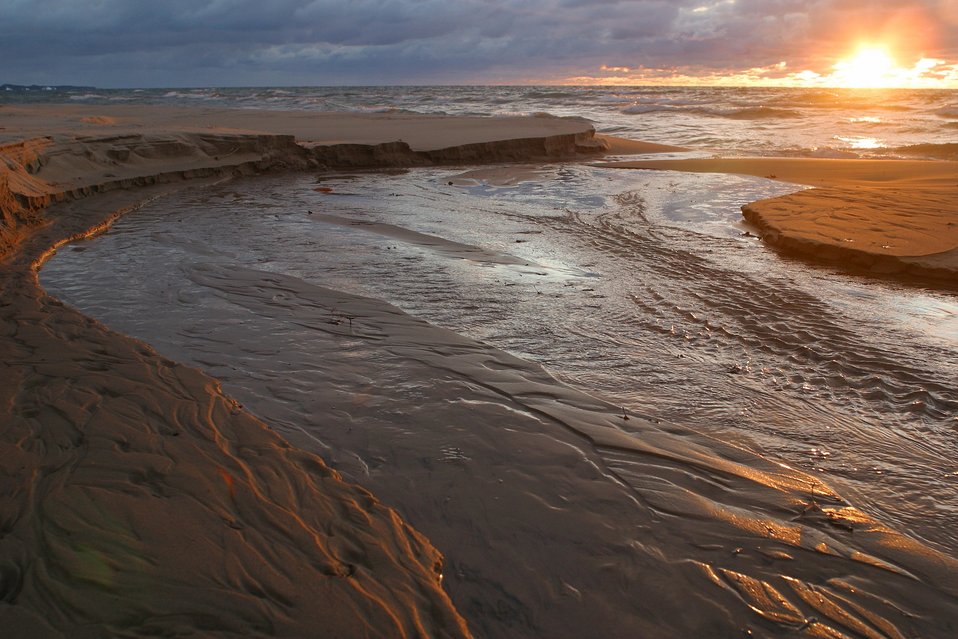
Lake michigan sunset

Late-november sunset, pierport, michigan.